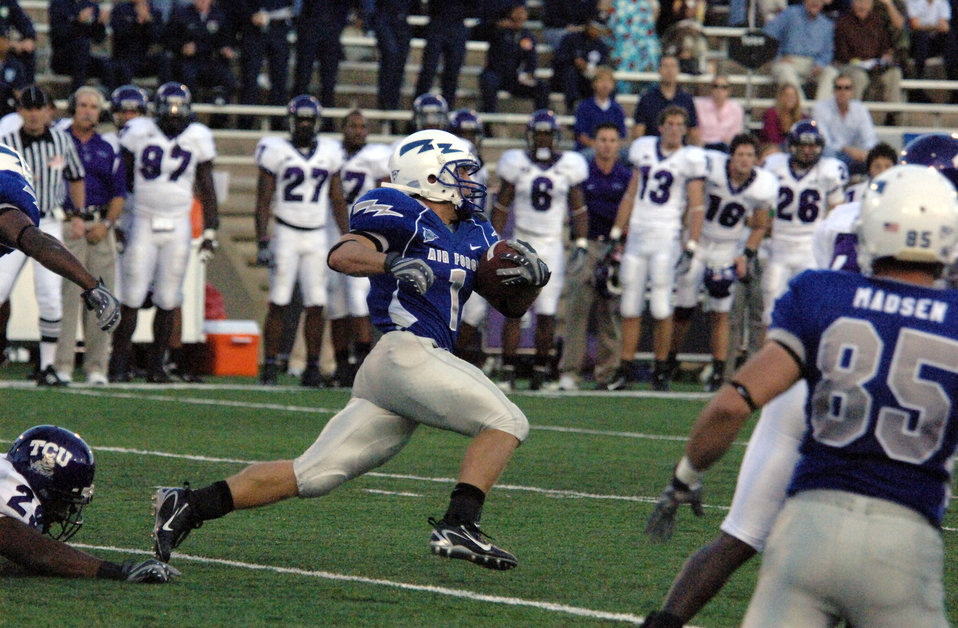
Falcons edge Frogs in overtime

Falcon wide receiver Chad Hall breaks into the clear Sept. 13 at Falcon Stadium at the U.S. Air Force Academy. Hall logged 113 all-purpose yards running, receiving, returning kicks and returning punts in the bluesuiters 20-17 overtime win over TCU.